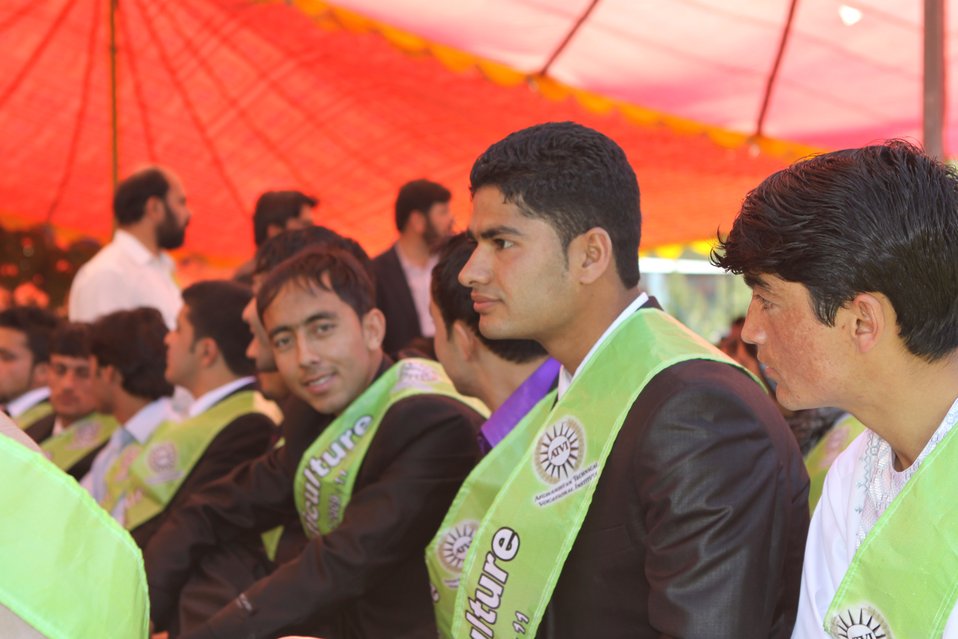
100522 ATVI Graduation 036